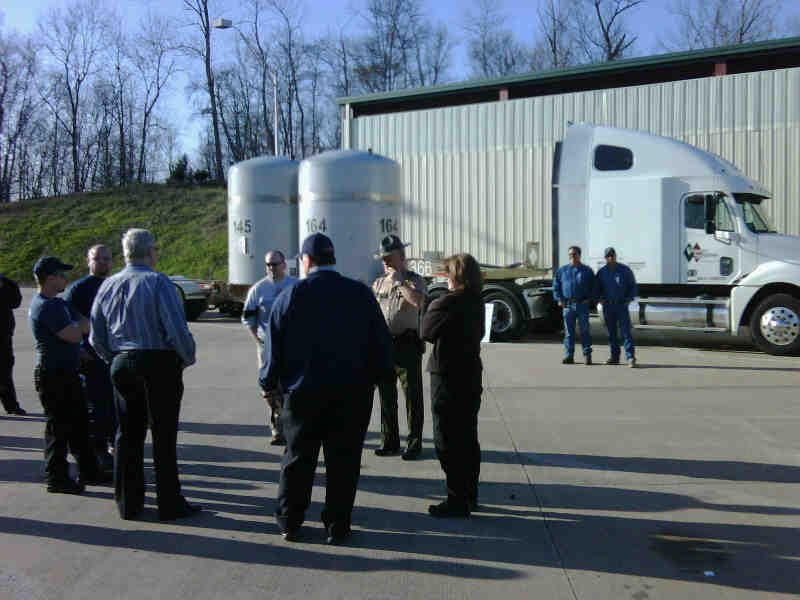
WIPP Accelerates Route Openings with ARRA Funding

A WIPP road show stops in Gray, TN.

Prior to any waste being shipped to WIPP for permanent disposal, the route to be used must be approved. This requires meeting with state and local officials regarding the proposed route.